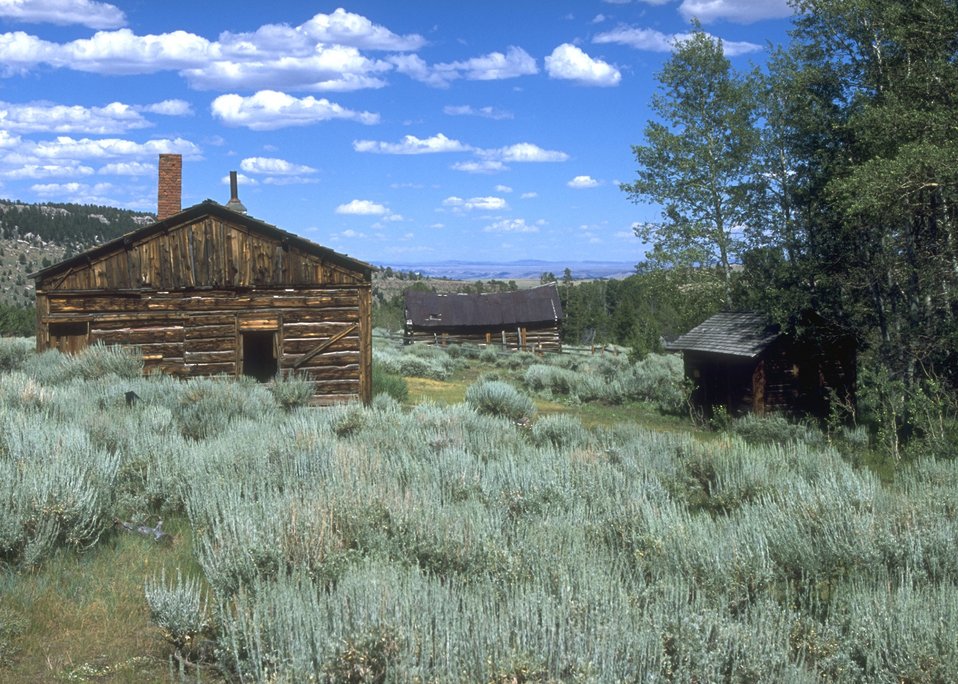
Structures at Miners Delight, Lander Field Office.